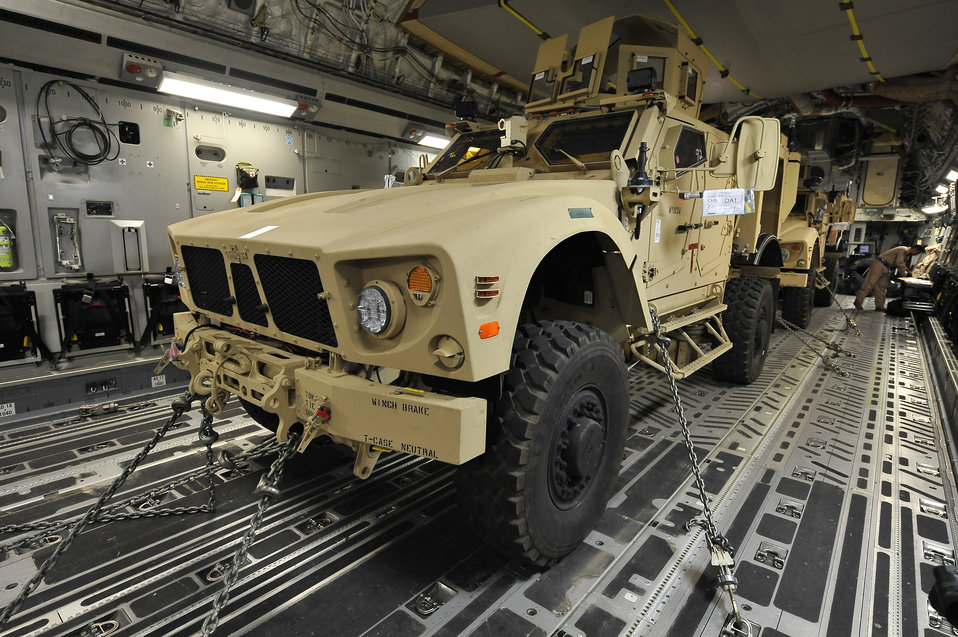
MATV load C-17

Two mine-resistant, ambush-protected all-terrain vehicles, or M-ATVs, await transport on a C-17 Globemaster III at Charleston Air Force Base, S.C., Sept. 30, 2009. The two M-ATVs are the first to be delivered to the Afghanistan theater for operational use. The C-17 is based out of McChord AFB, Wash.